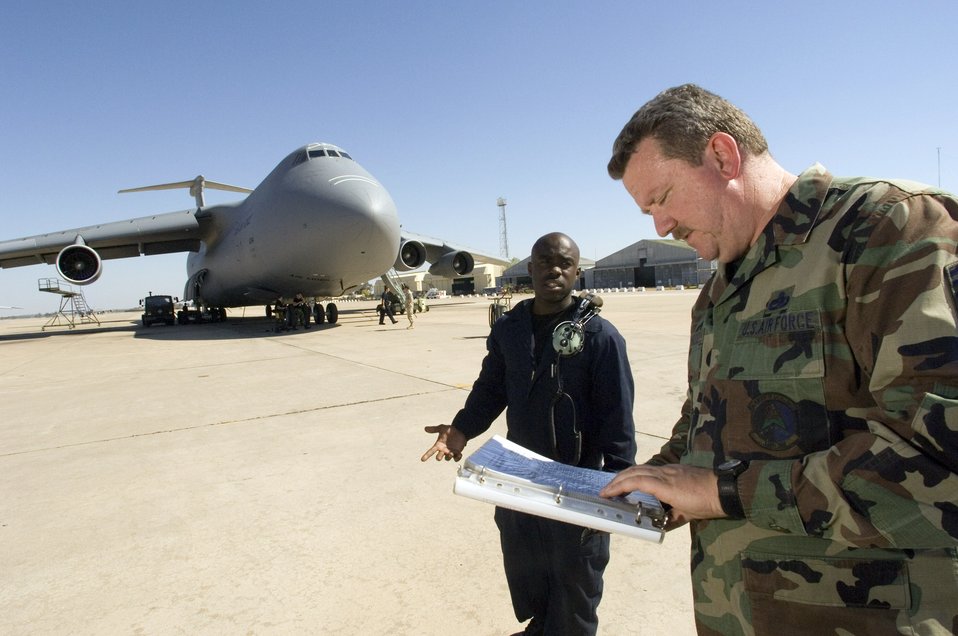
MORON AIR BASE, Spain -- Production superintendent Senior Master Sgt. Bill Morrissey (right) and hydraulics specialist Staff Sgt. Dante Davis discuss a repair needed on a C-5 Galaxy aircraft. Both Airmen are on temporary duty with the 4th Expeditionary Air Mobility Squadron to at this base in southern Spain. Sergeant Morrissey is a reservist from the 349th Component Repair Squadron and Sergeant Davis is with the 60 th Aircraft Maintenance Squadron, both at Travis Air Force Base, Calif.